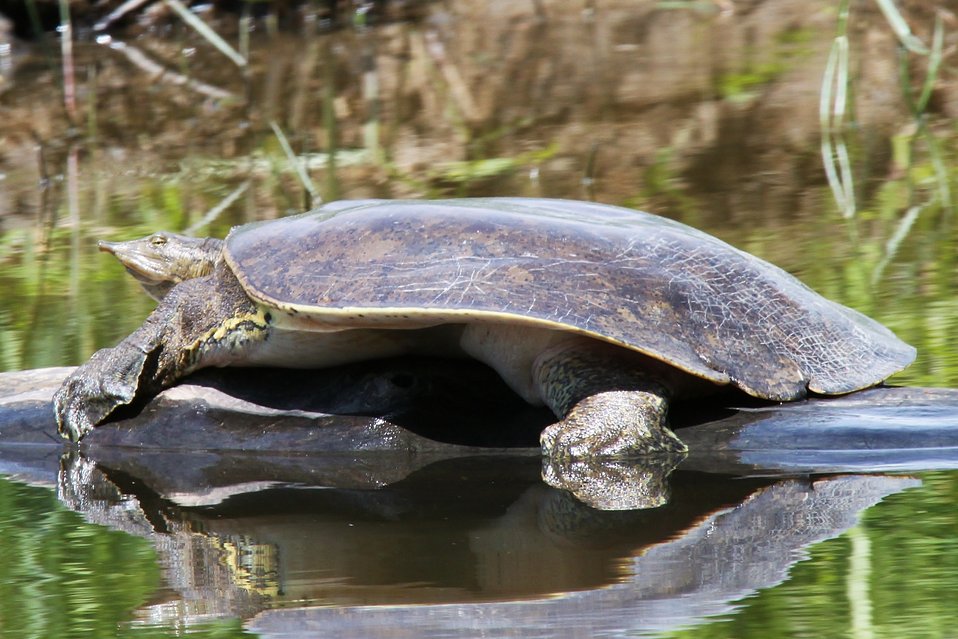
Spiny Softshell Turtle (female) photographed at Missisquoi National Wildlife Refuge.